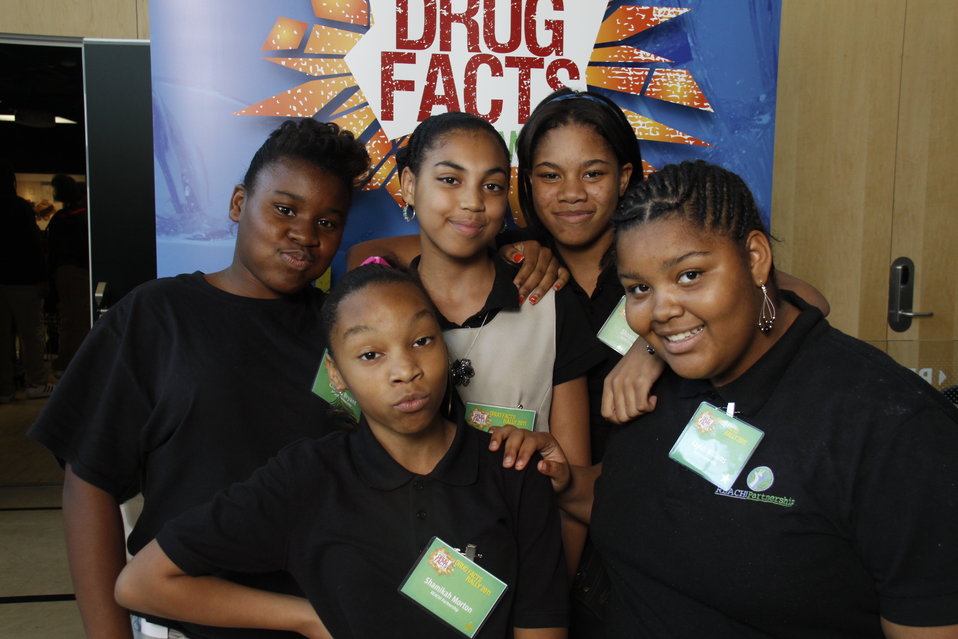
NDFW Mentor Event